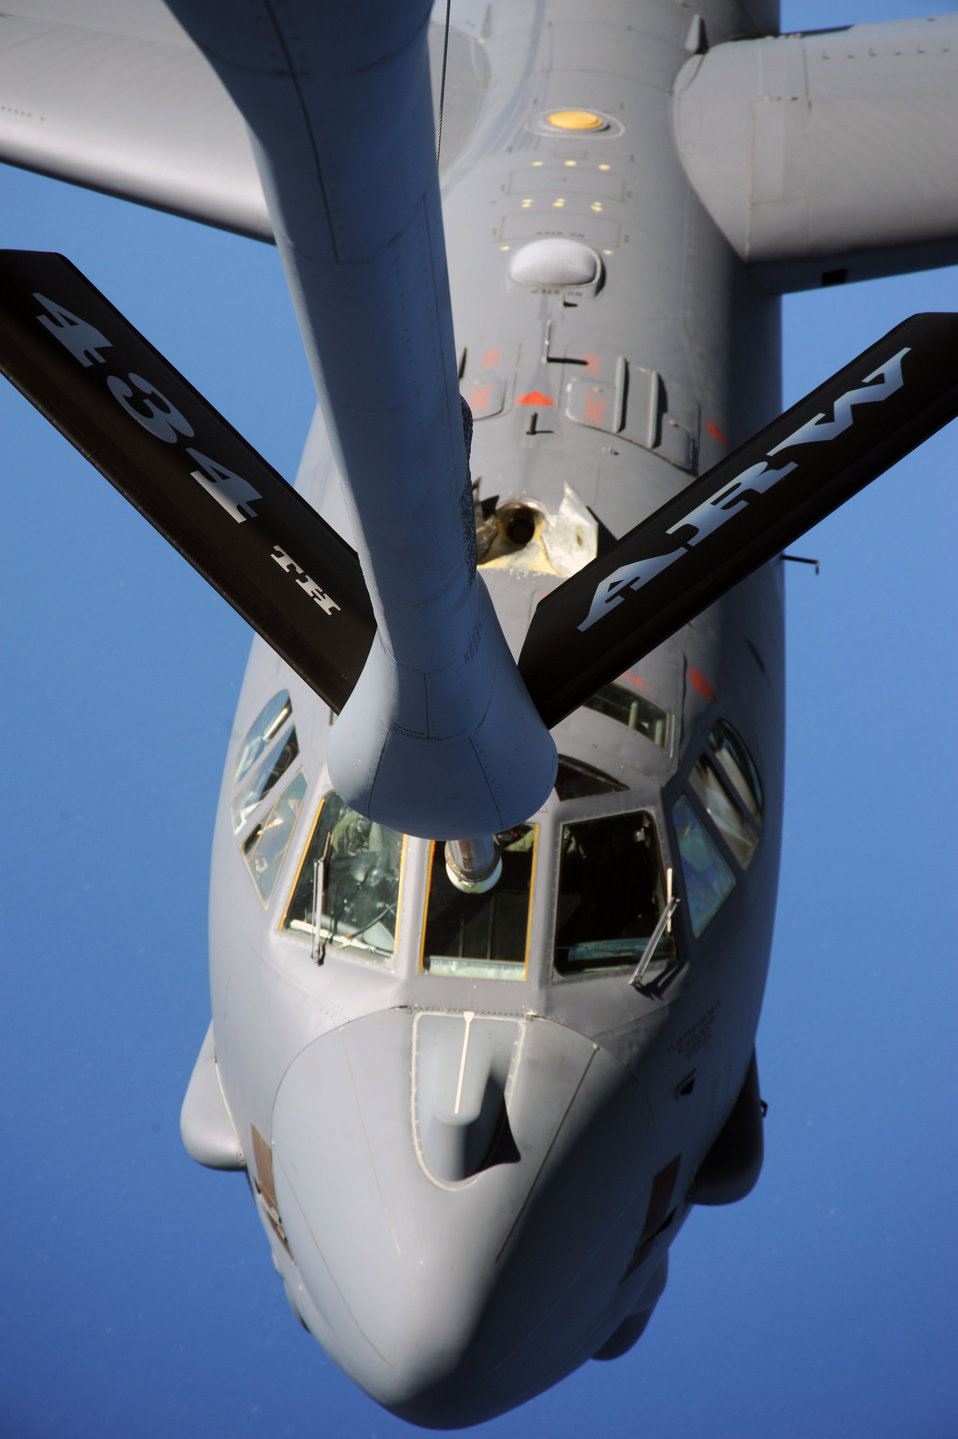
Lining up for contact!

A B-52 Stratofortress from Minot Air Force Base, N.D. moves into position to receive fuel Jan. 9 from a KC-135 Stratotanker over the Pacific Ocean during an exercise. The B-52 is deployed to Andersen Air Force Base, Guam.